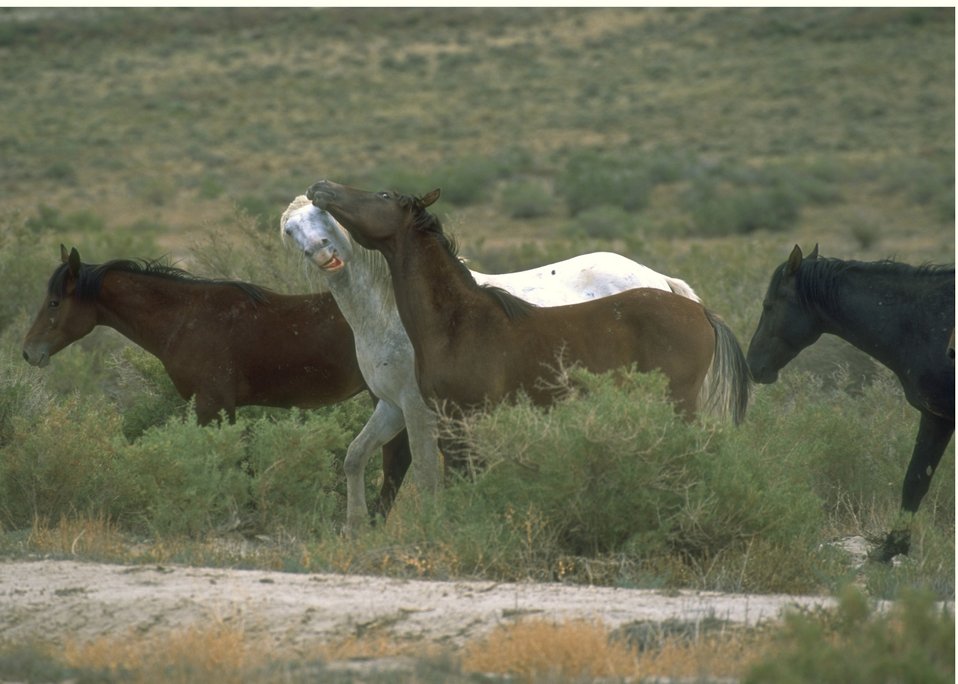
Wild horses, Rock Springs Field Office.